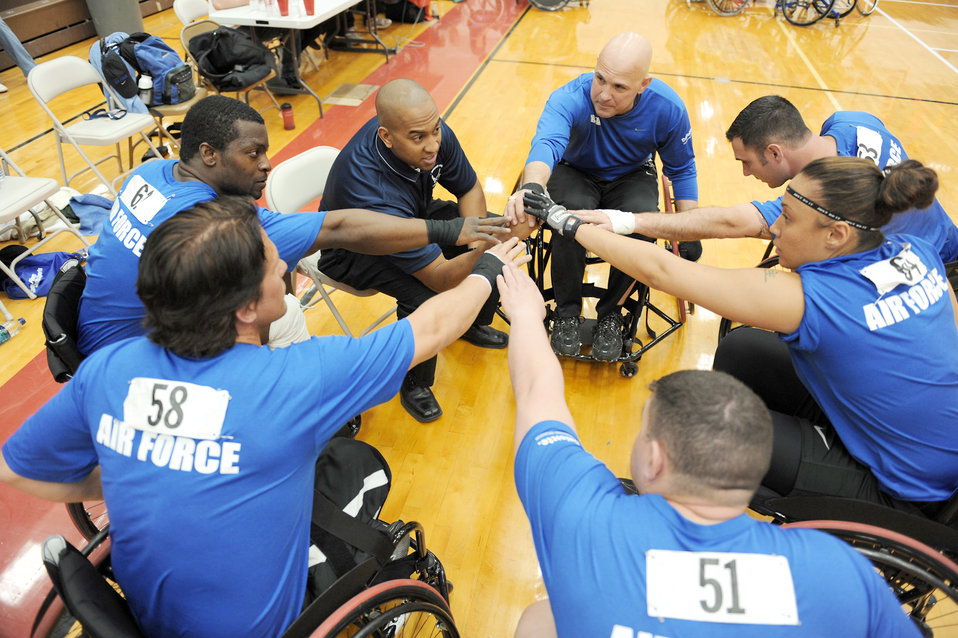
Team Air Force wins game

Team Air Force throws their hands in for a quick cheer before playing a wheelchair basketball game during the Warrior Games bronze medal match against the Navy May 12, 2010, at the Olympic Training Center in Colorado Springs, Colo. The Air Force went on to win the game 13-10.